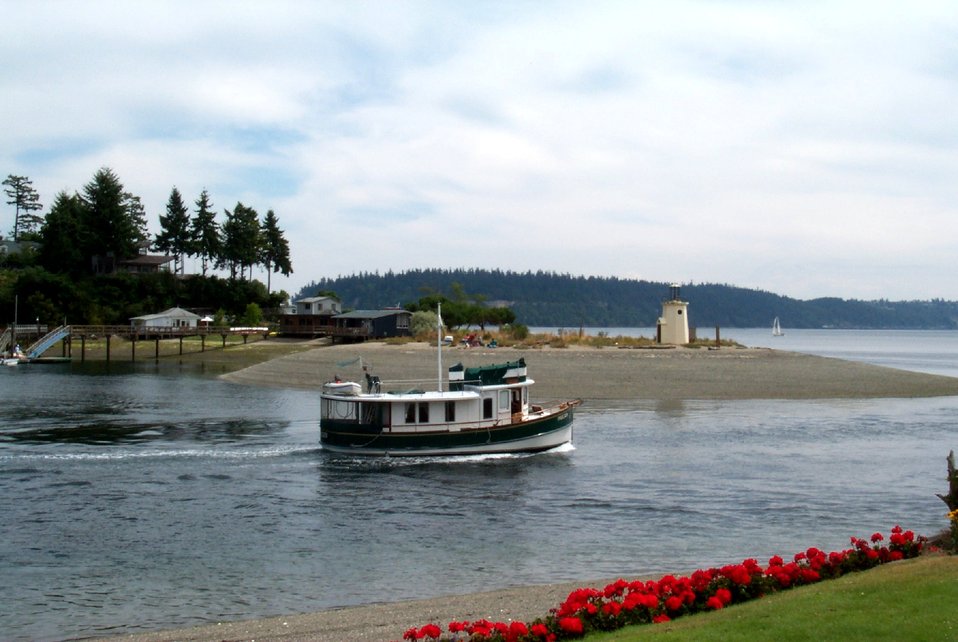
Private boat leaving Gig Harbor for a day's cruising.